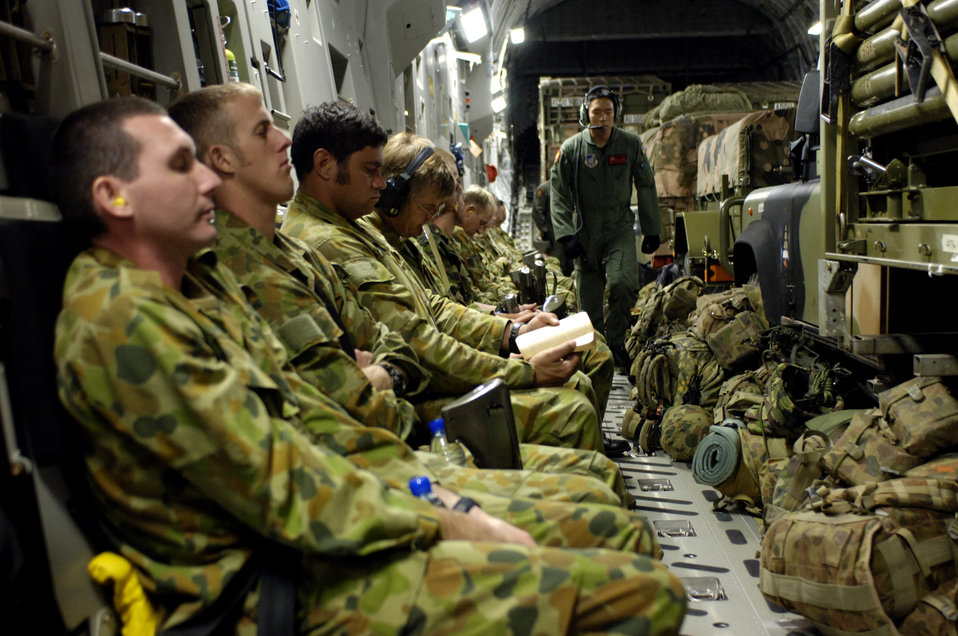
Operations down under

Airman James Ngo checks cargo and passengers on a C-17 Globemaster III after taking off from Royal Australian Air Force Base Townsville, Australia, on Thursday, June 1, 2006. Airman Ngo is a loadmaster with the 535th Airlift Squadron, Hickam Air Force Base, Hawaii.